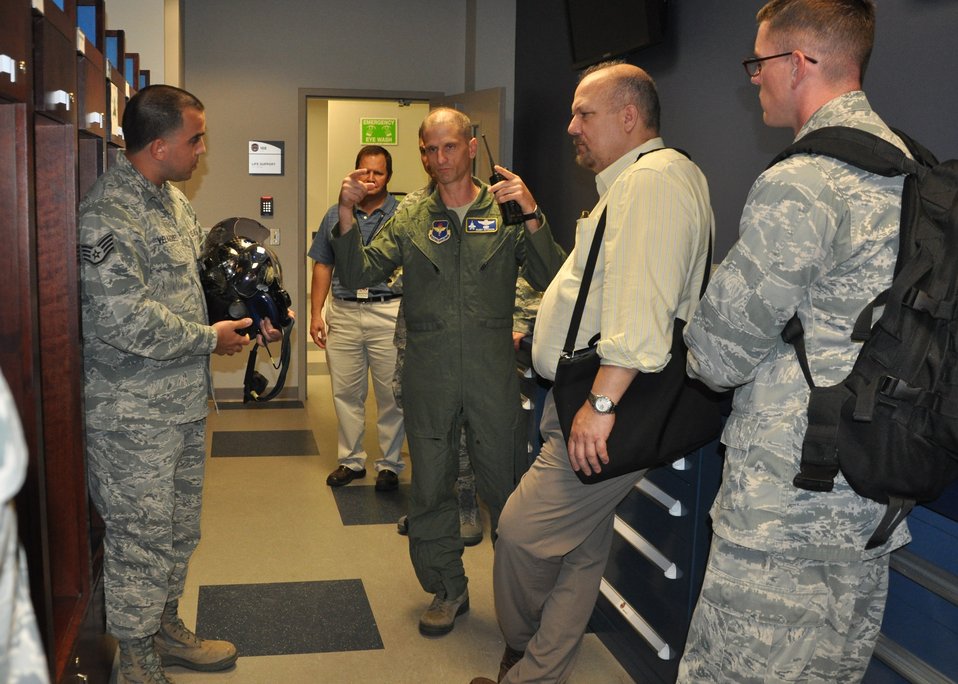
A helmet fit to fight

Lt. Col. Randal Efferson, center, and Staff Sgt. Lemuel Velazquez, left, explain to evaluators how the F-35 Lightning II helmet is custom fit to the pilot’s head. Velazquez said the key elements of the helmet are fully incorporated so the pilot can more effectively focus on his tasks and avoid cockpit distractions. Efferson is the deputy operations group commander, 33rd Fighter Wing and Velazquez is an aircrew flight technician, 33rd Operations Support Squadron.